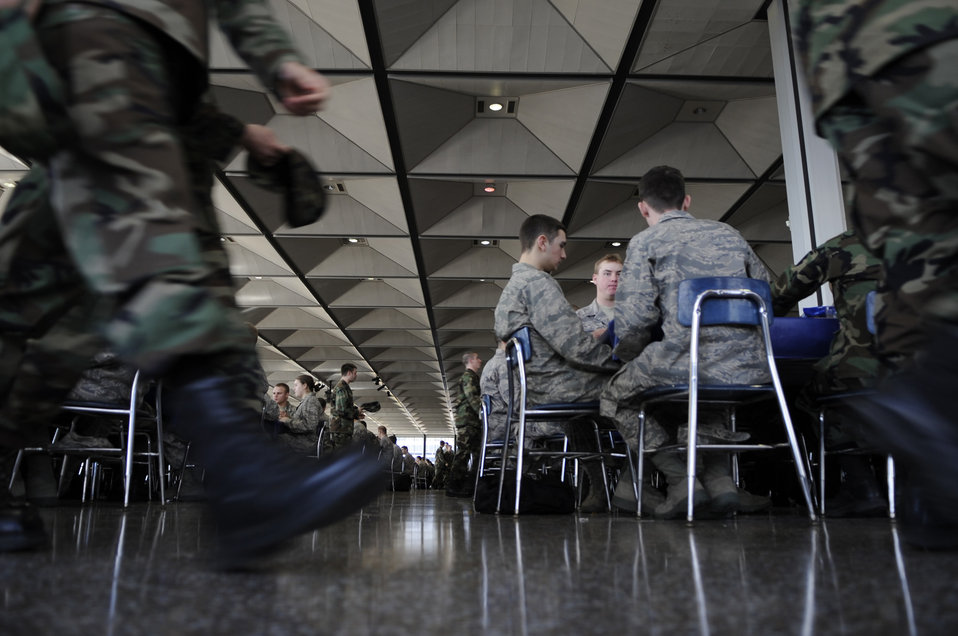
U.S.Air Force Academy Mitchell Hall Cadet Dining Facility

Cadets eat lunch Jan. 23 at Mitchell Hall Cadet Dining Facility at the U.S. Air Force Academy in Colorado Springs, Colo. The dining facility feeds approximately 4450 cadets and sits on 1.75 acres.